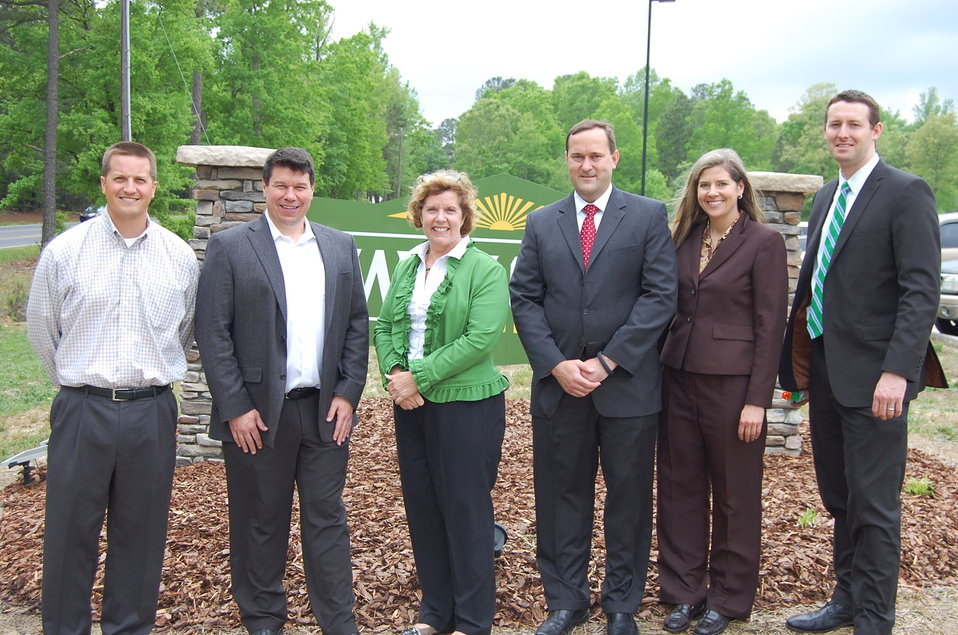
A U.S. Department of Agriculture (USDA) Rural Development (RD) business loan guarantee helped Aseptia/Wright Foods in Troy, NC expand its operations. The company was able to purchase a building, equipment and make building improvements for their first commercial-scale manufacturing facility creating 80 jobs. (L to R VantageSouth Bank Jay Risinger, President and Chief Executive Officer, Wright Foods Michael Drozd, USDA RD Rural Business-Cooperative Service Acting Administrator Lillian Salerno, VantageSouth Bank Brad Neigel, VantageSouth Bank Heidi Whitesell, and USDA Rural Development David Thigpen).